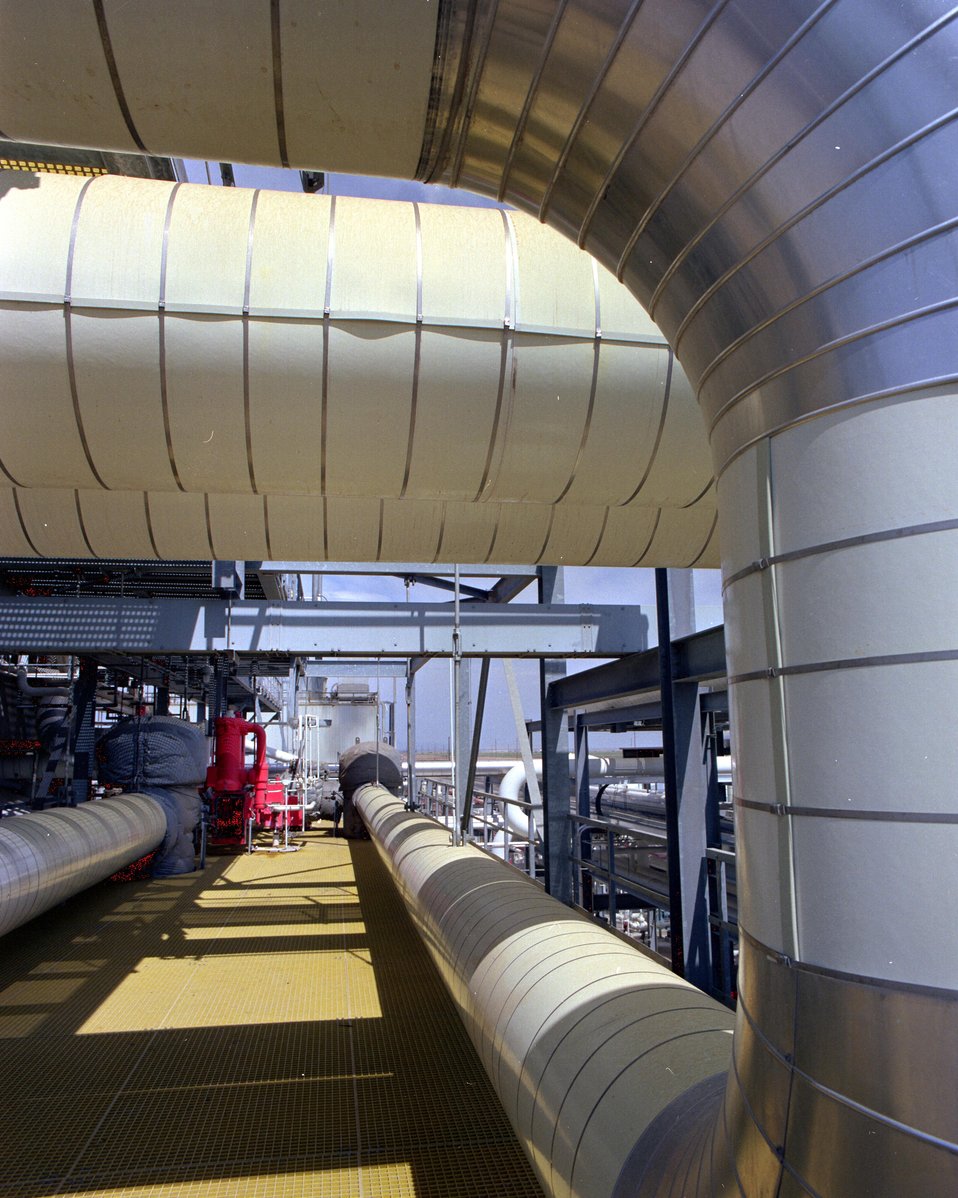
LEATHERS GEOTHERMAL POWER PLANT IN IMPERIAL COUNTY, CALIFORNIA.

THE LEATHERS GEOTHERMAL POWER PLANT IS LOCATED IN THE SALTON SEA GEOTHERMAL RESOURCE AREA NEAR SAN DIEGO, CALIFORNIA. IT IS PART OF THE IMPERIAL VALLEY PARTNERSHIP PROJECT, UNDER CONTRACT TO SELL POWER TO SOUTHERN CALIFORNIA EDISON CO.